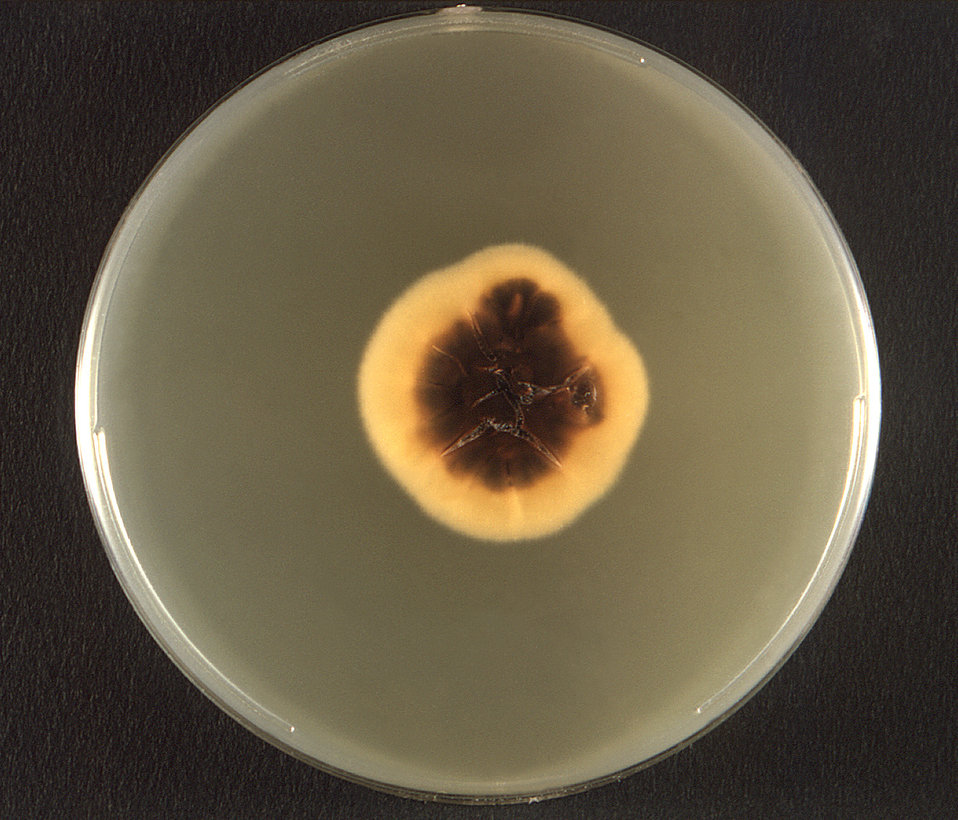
This photograph depicts the reverse view of a Petri dish within which a fungal colony of a Mexican isolate ofTrichophyton rubrum var. rodainii had been cultured atop a medium of Sabouraud's agar.